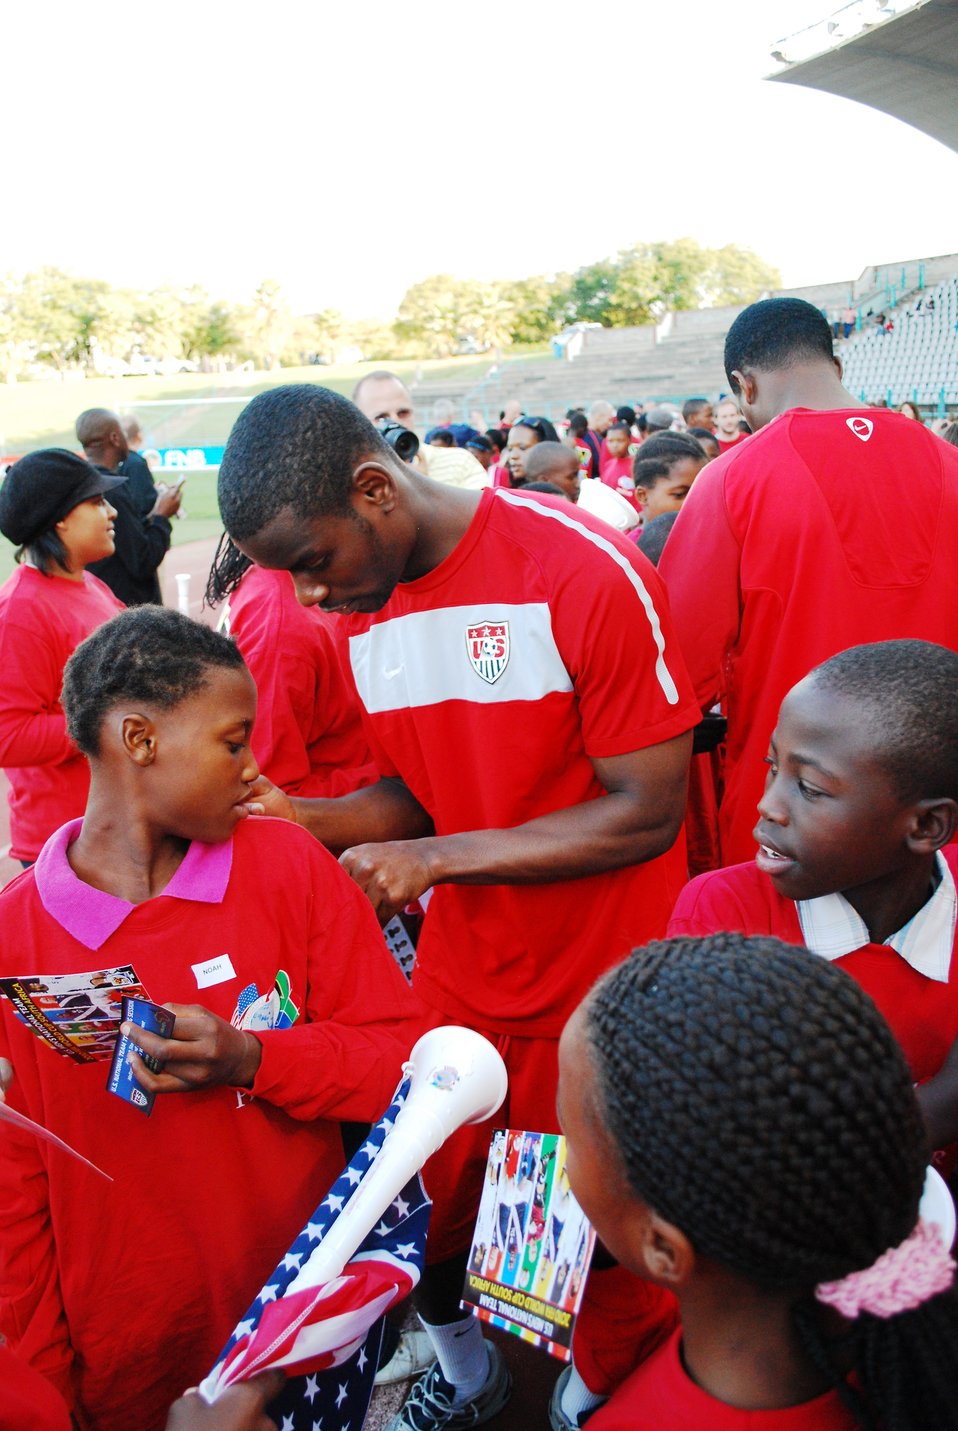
Maurice Edu signs autographs at the U.S. National Soccer Team's open practice session with South African students and U.S. Mission to South Africa families at the Pliditch Stadium in Pretoria, South Africa, on June 6, 2010. The U.S. National Soccer Team is preparing for the 2010 World Cup in South Africa.